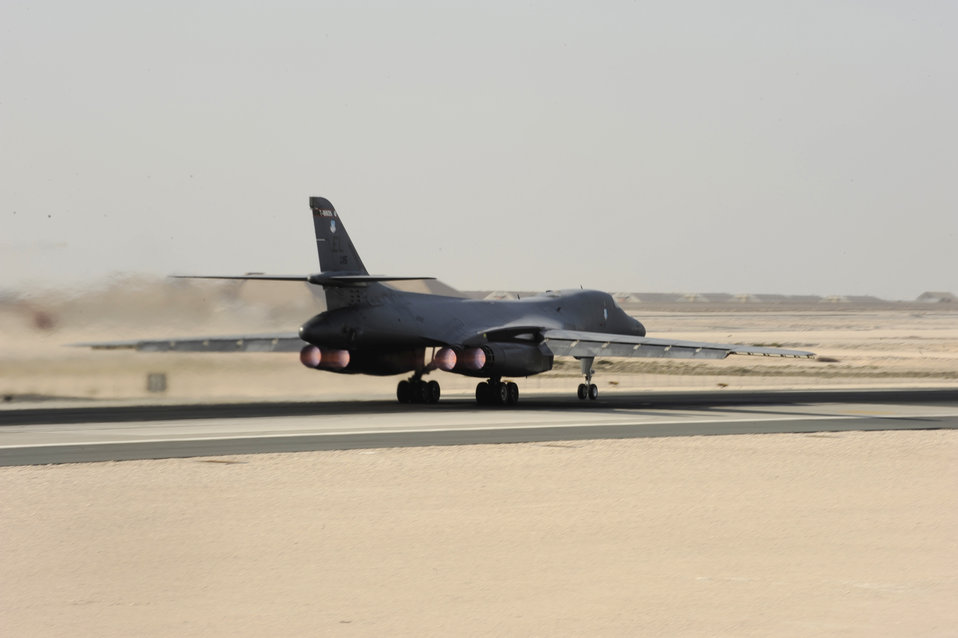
Operation Enduring Freedom

A B-1B Lancer aircrew, assigned to the 37th Expeditionary Bomb Squadron, takes off for the last mission of their six-month deployment Jan. 23, 2010, at an air base in Southwest Asia.